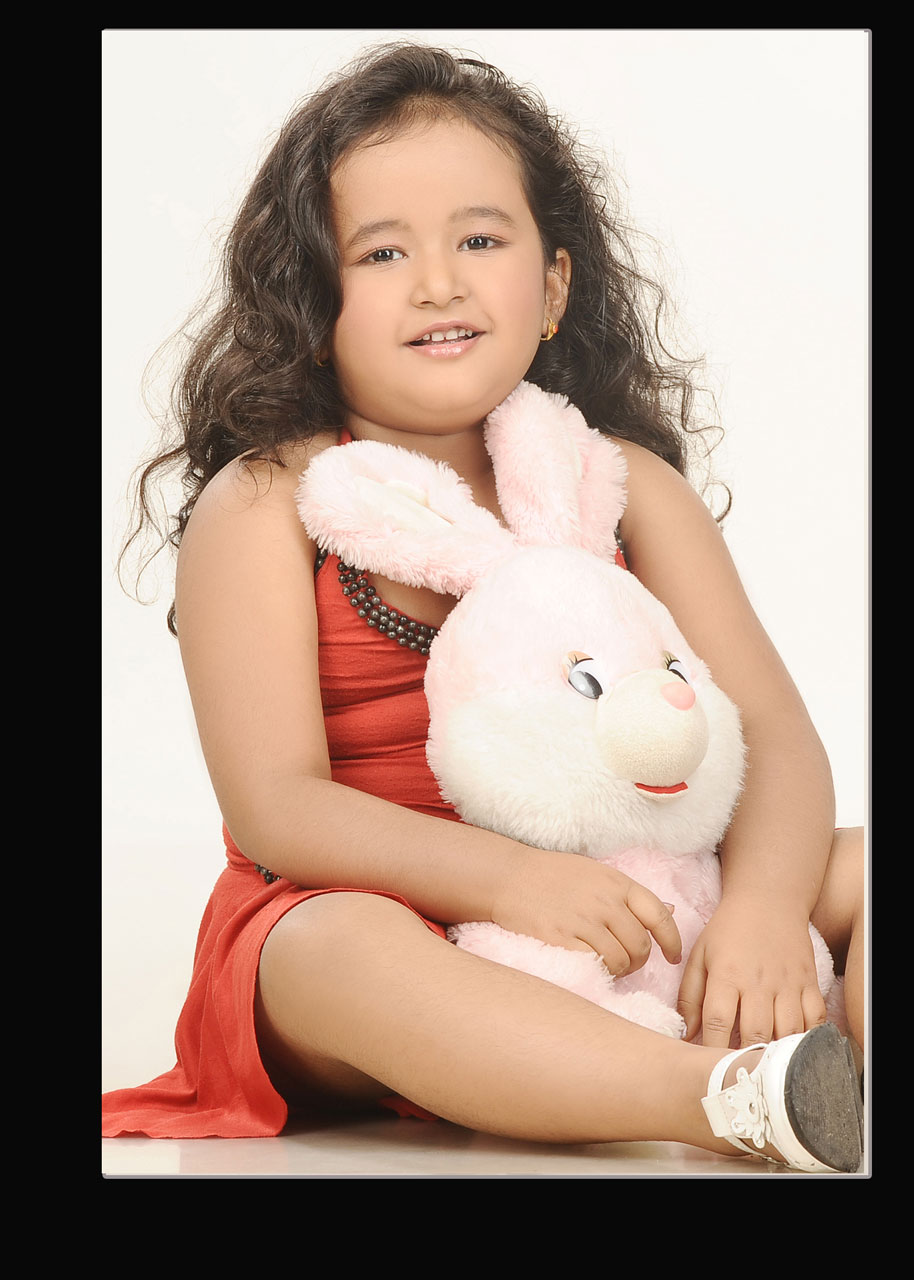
Dona roy tariang. dona is a jolly girl from guwahati. born to a jaintia mother and bengali father, dona is a little jolly girl..